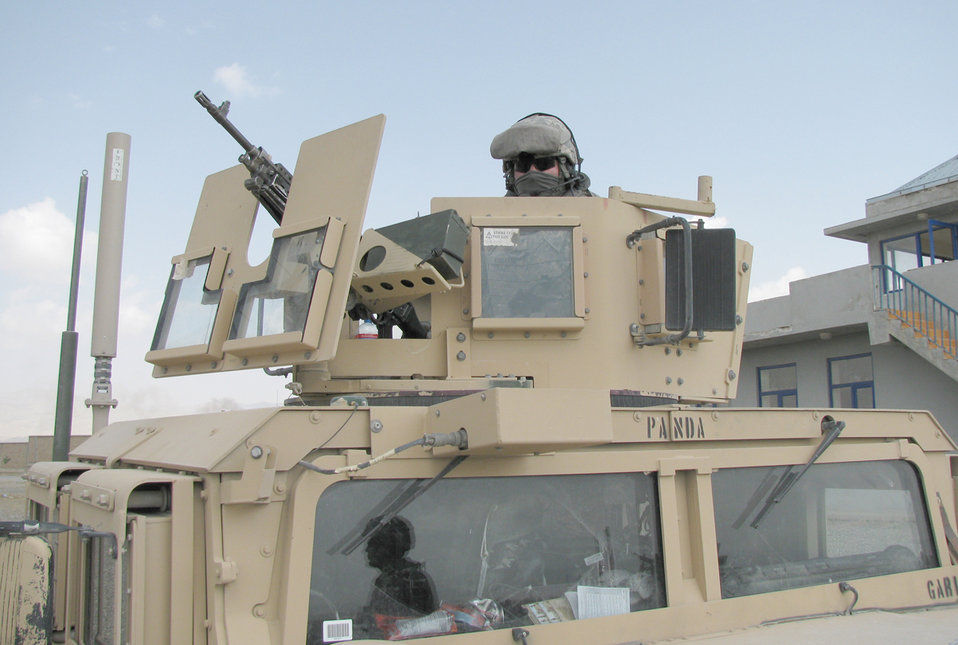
Staff Sgt. Alexander Yessayan

Staff Sgt Alexander Yessayan sits in the gunner's seat during a site survey while deployed to Afghanistan in 2009. Sergeant Yessayan was recognized in the Air Force's